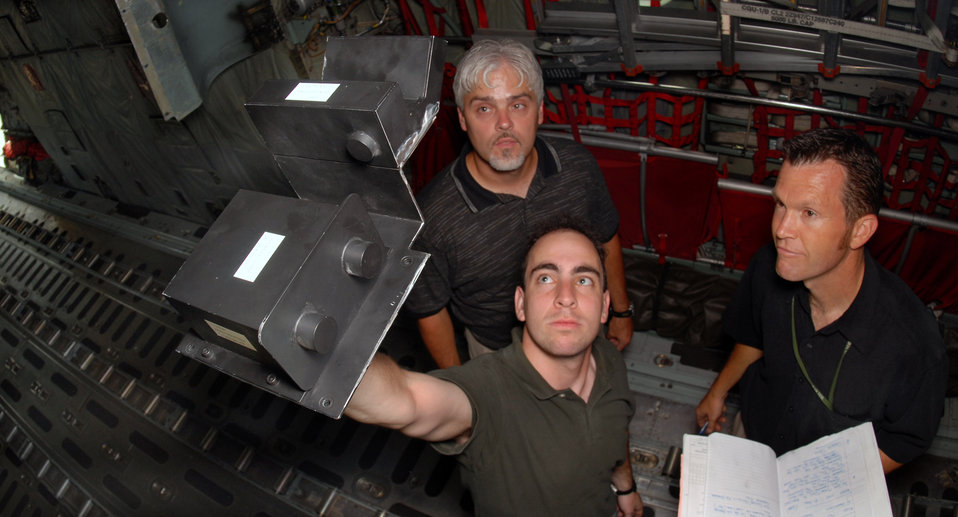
C-130 upgrades geared to save Air Force $250M

Engineer Jeremy Goldin holds a model of a new C-130 Hercules anti-skid system June 21 as he, hydraulics specialist Ronald Crabtree and engineer Todd Walker tour a C-130 June 21 at Little Rock Air Force Base, Ark. The new anti-skid system is projected to be installed in C-130s in 2010. All three are from Hill Air Force Base, Utah.